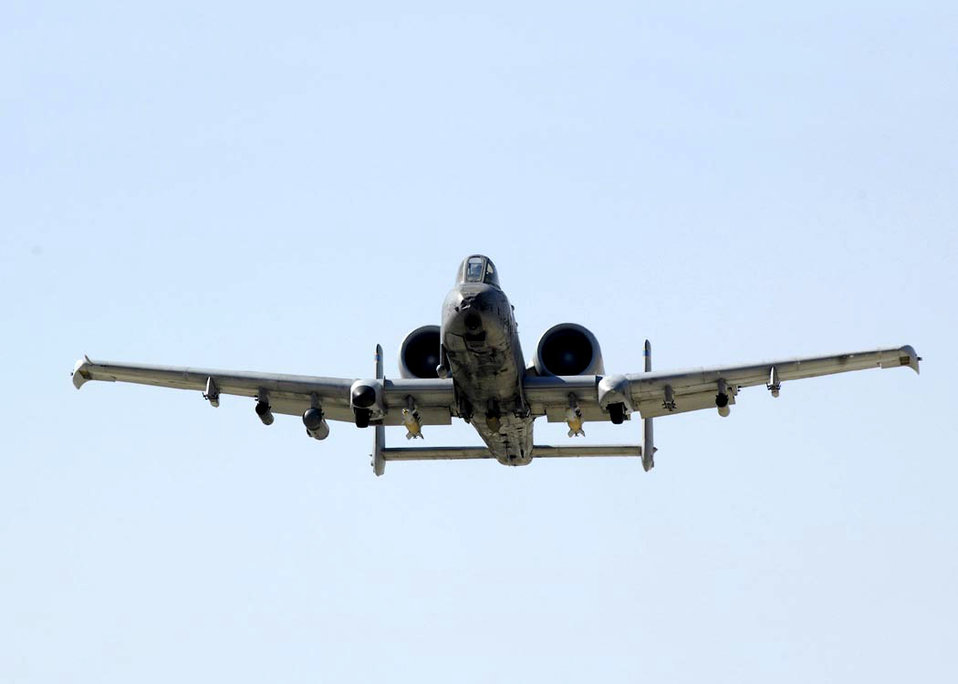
June 25 airpower summary: A-10s destroy enemy forces

A-10 Thunderbolt IIs, like this one taking off from Bagram Air Base, Afghanistan, provide close-air-support for coalition troops engaging enemy forces in Afghanistan and Iraq.